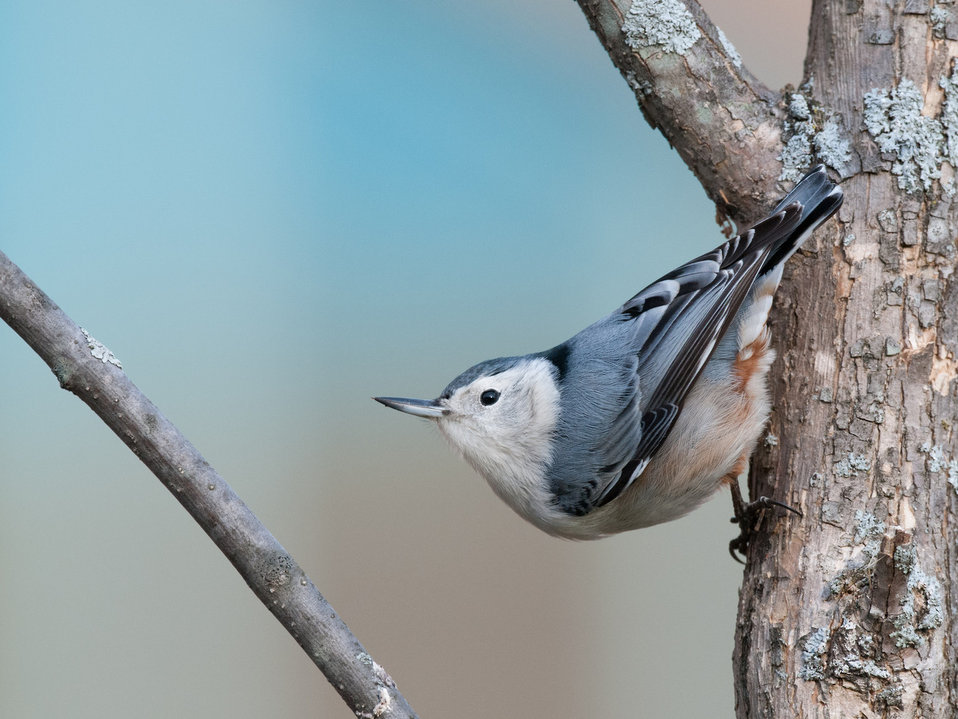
White-breasted Nuthatch

Photographed in Hadley, MA.